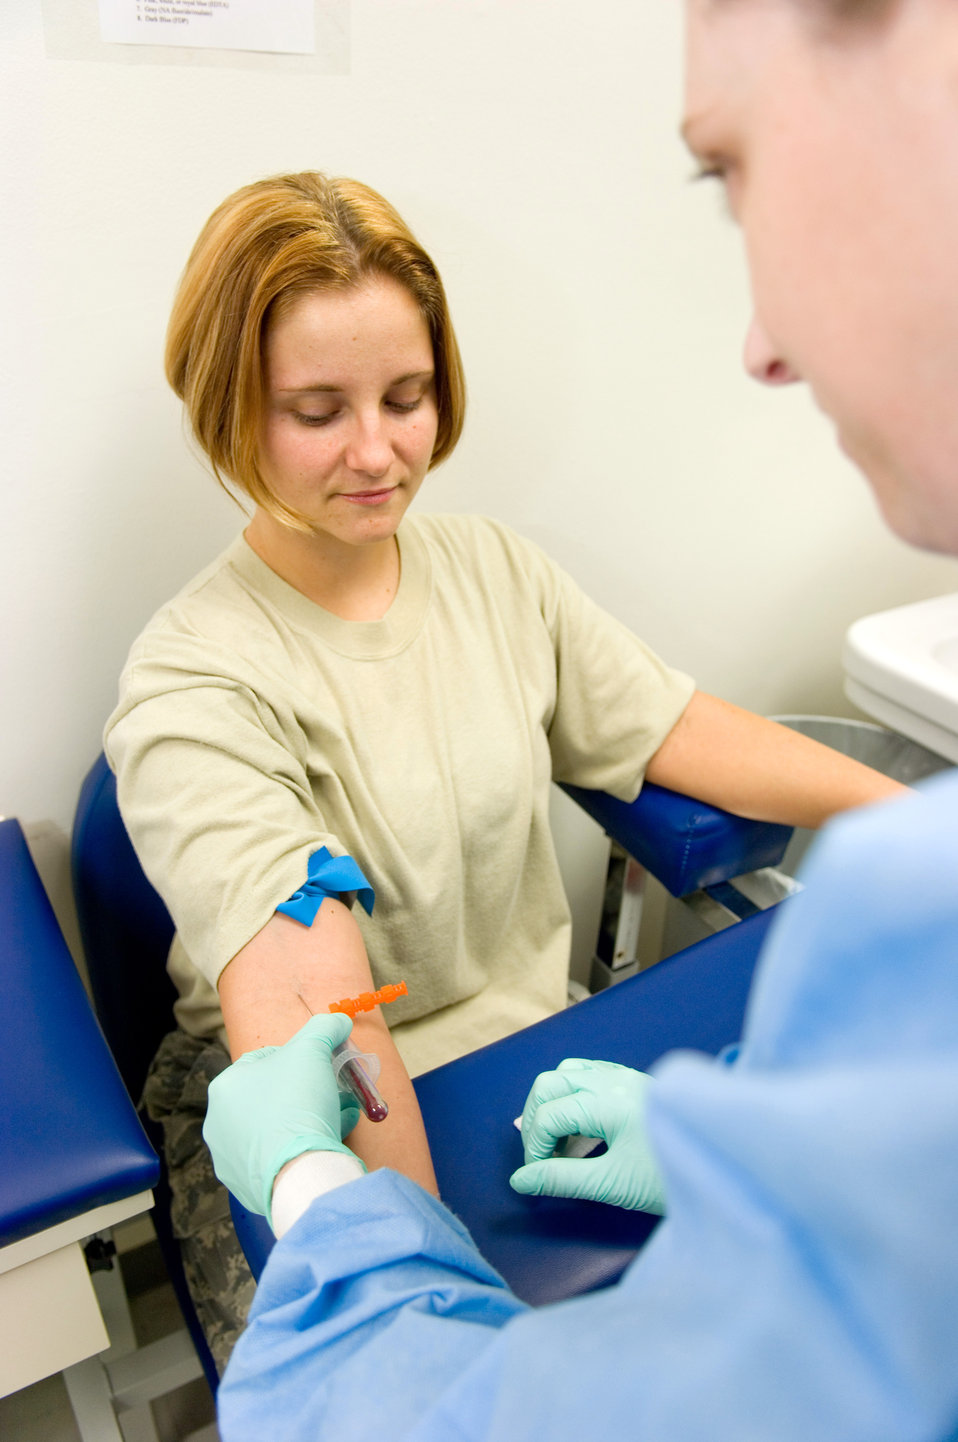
Blood check

Tech. Sgt. Jamie Disney draws blood March 19 from Staff Sgt. Natosha Nordquist March 19 at Yokota Air Base, Japan. Both sergeants are from the 374th Medical Support Squadron here. The 374th Medical Group clinical laboratory received accreditation from the College of American Pathologists recently.